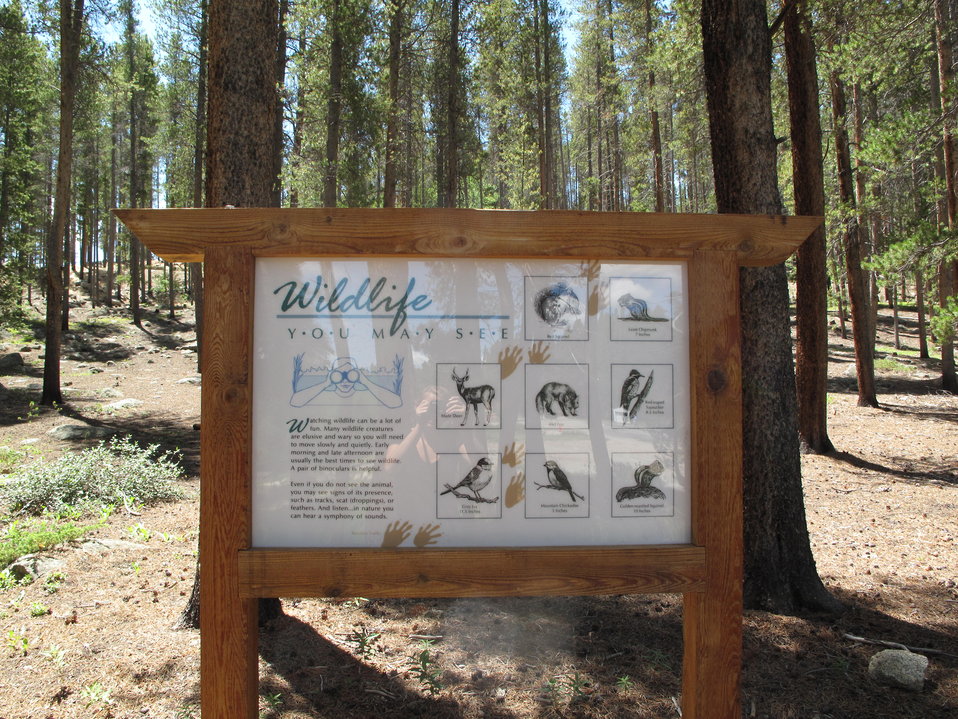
Leadville National Fish Hatchery

Informational signs are found along the trail, describing the flora and fauna in the area.